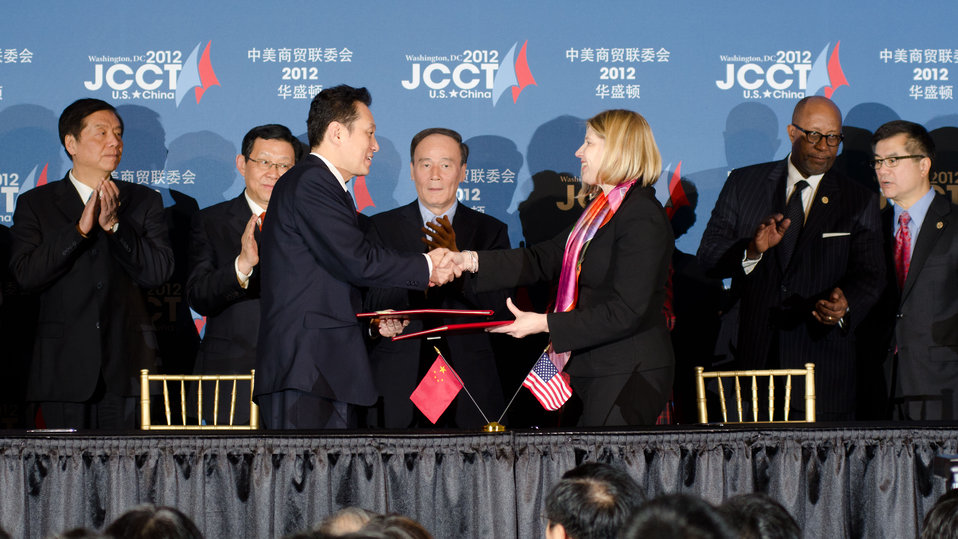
Chinese Ministry of Commerce Vice Minister Wang Chao (left) and U.S. Trade and Development Agency Acting Director Leocadia Zak (right) exchange signed copies of the Memorandum of Understanding between the U.S. Trade and Development Agency and the Ministry of Commerce of the People’s Republic of China in Support of U.S.-China Trade Cooperation, with the support of with the support of principal leaders from the Chinese delegates and U.S. hosts, (L to R) China’s Ambassador to the U.S. Zhang Yesui, Vice Minister of Industry and Information Technology Liu Lihua, Chinese Minister of Commerce Chen Deming, Chinese Vice Premier Wang Qishan, Acting U. S. Commerce Secretary Rebecca Blank, U.S. Trade Representative Ron Kirk and U.S. Ambassador to China Gary Locke during a signing ceremony at the conclusion of the 23rd Session of the US-China Joint Commission of Commerce and Trade at the Andrew W. Mellon Auditorium in Washington, D.C. on Wednesday, Dec. 19, 2012. Supporting the signing is Chinese Vice Premier Wang Qishan (center). The JCCT holds high-level plenary meetings on an annual basis to review progress made by working groups that focus on a wide variety of trade issues. These working groups meet throughout the year to address topics such as intellectual property rights, agriculture, pharmaceuticals and medical devices, information technology, tourism, commercial law, environment, and statistics.